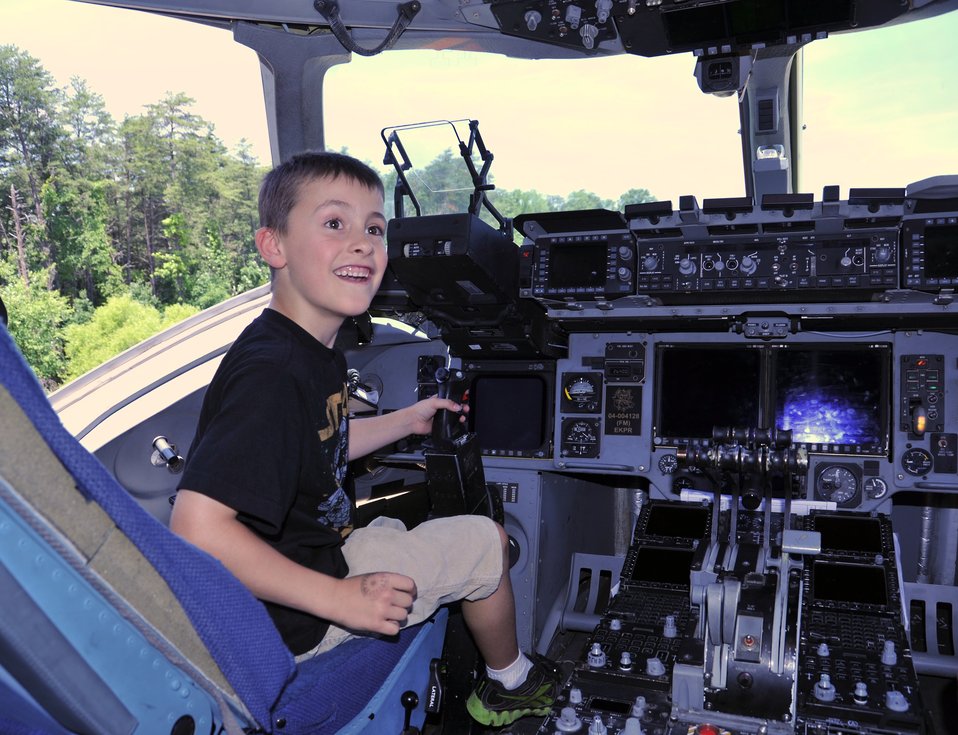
Young Pilot of a C-17

Kendall Davis, 7, explores the flight deck of a C-17 Globemaster, at